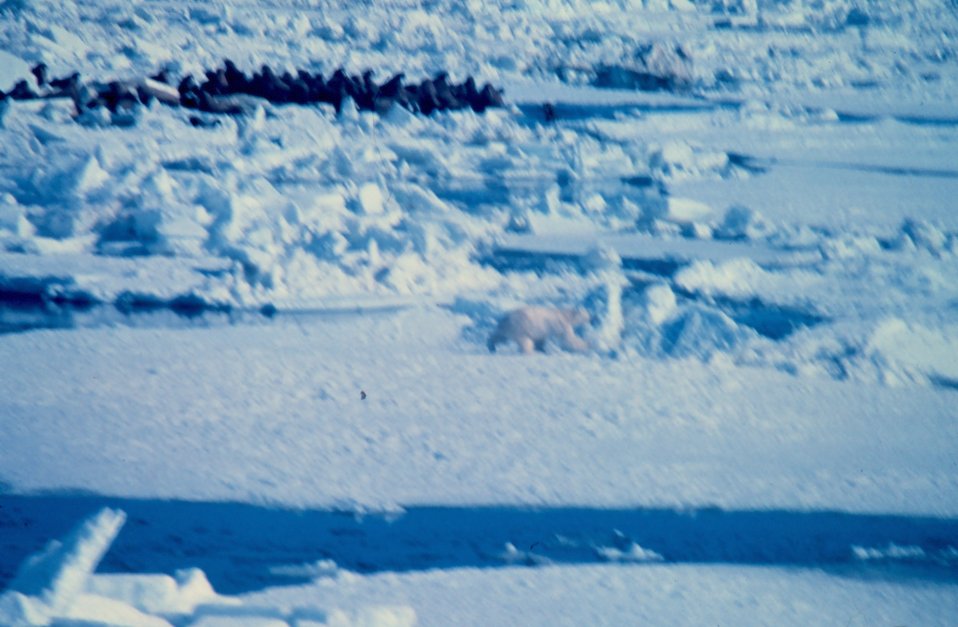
Polar bear - Ursus maritimus - hunting near large group of walrus. Polar bear normally won't attack walrus unless walrus is sick or very young.